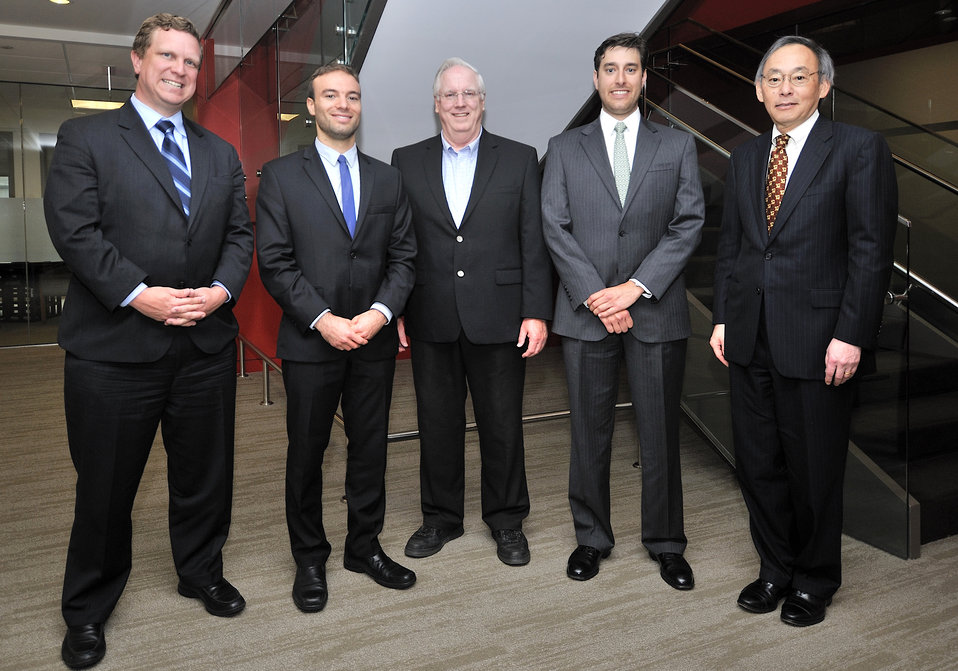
National Clean Energy Business Plan Competition

The National Clean Energy Business Plan Competition inspired nearly 300 university teams across the country to create new businesses to commercialize promising energy technologies developed at U.S. universities and the National Laboratories.